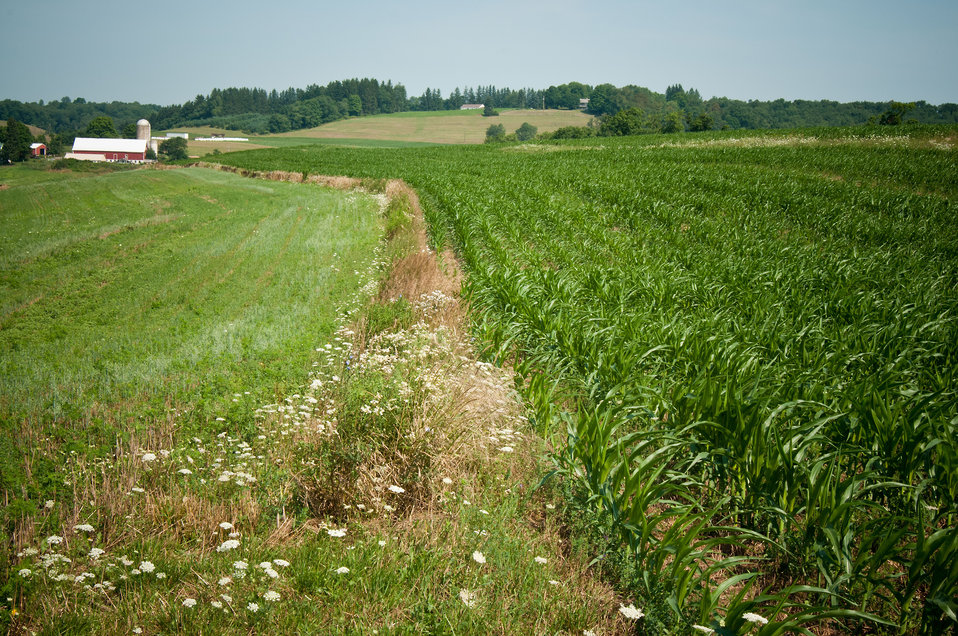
Corn grows on Pennwood Dairy Farms Berlin, PA. Pennwood Dairy Farms has been owned and operated by the Stoltzfus family for 50 years. The dairy grows corn, alfalfa and hay grass for feed for their dairy herd. The dairy also uses an anaerobic digester to produce energy for the dairy. The digester produces one million kilowatt hours; half of the energy needs of the farm, the other five hundred thousand kilowatt hours are sold back to the grid. An anaerobic digester is a component of a waste management system that provides biological treatment in the absence of oxygen. The digester captures biogas for energy production, manages odors, reduces the net effect of greenhouse gas emissions, and reduces pathogens. The anaerobic digester practice is part of a planned conservation management system that manages manure and/or comprehensive nutrient management system. Agriculture Secretary Tom Vilsack visited the dairy onTuesday, July 17, 2012. During his visit Secretary Vilsack highlighted the U.S. Department of Agriculture’s (USDA) energy efficiency programs and announced a new effort to help rural consumers make affordable, energy-efficient improvements to their homes and businesses.